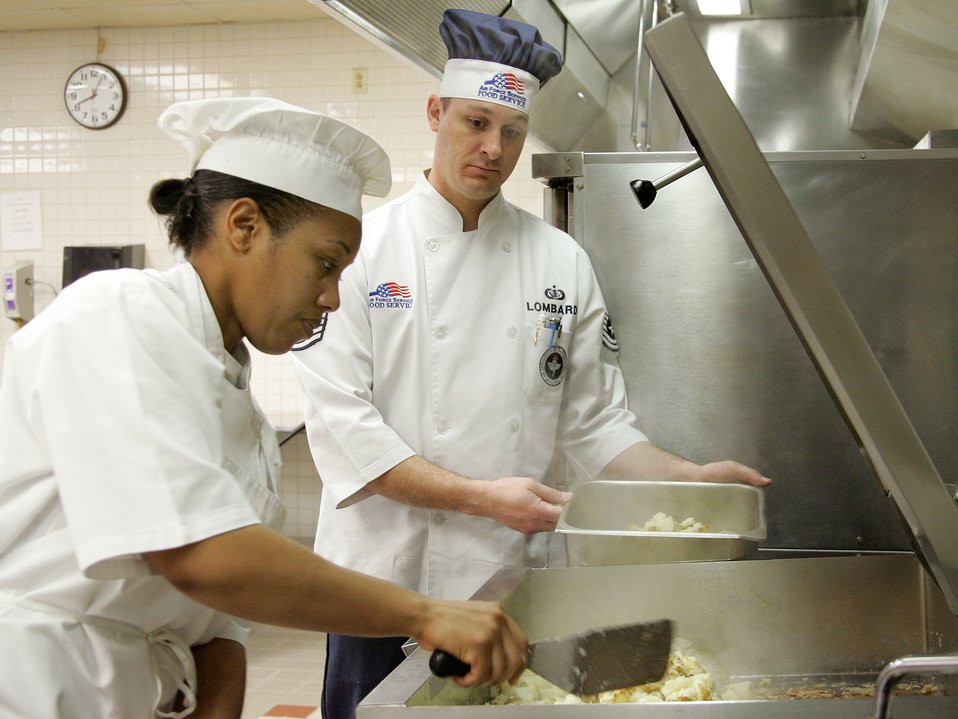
Culinary Arts

Senior Airman Crystal Radcliff